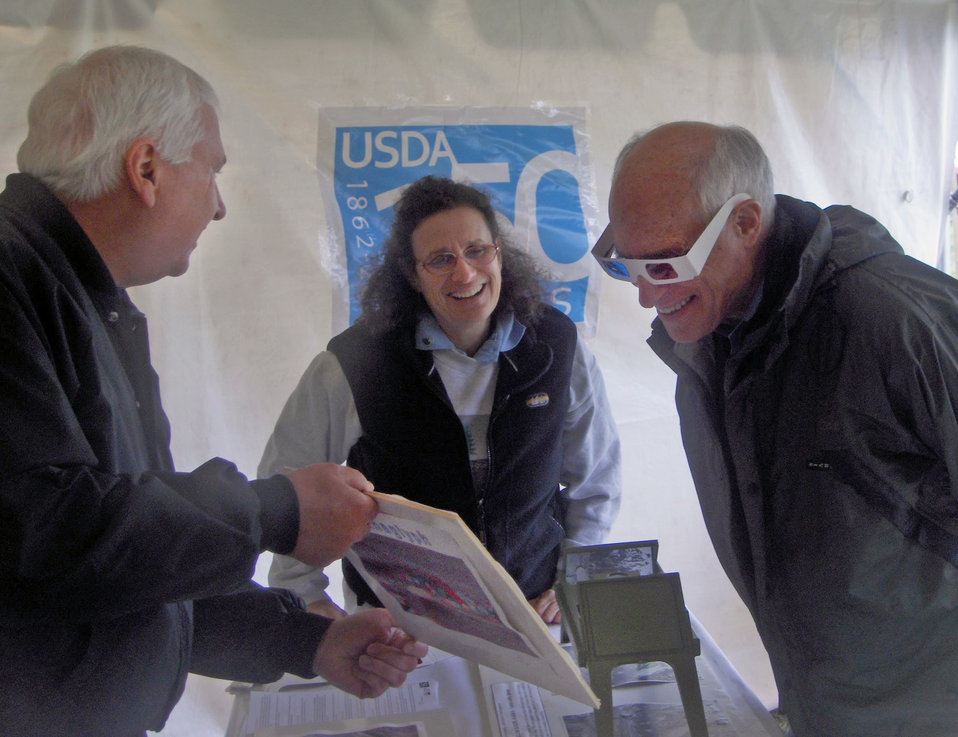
Agriculture Under Secretary for Natural Resources and Environment Harris Sherman looks over a display at the Natural Resources and Conservation Service (NRCS) booth during Earth Day 2012 on the National Mall in Washington, D.C., on Sunday, April 22, 2012.